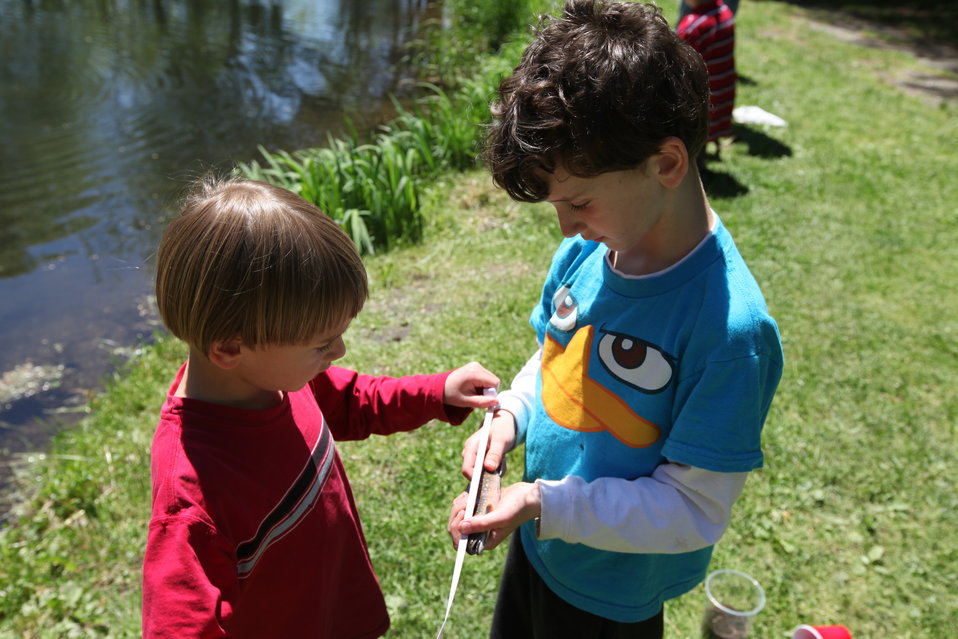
Youth Fishing Derby 2012

Megan Nagel/USFWS